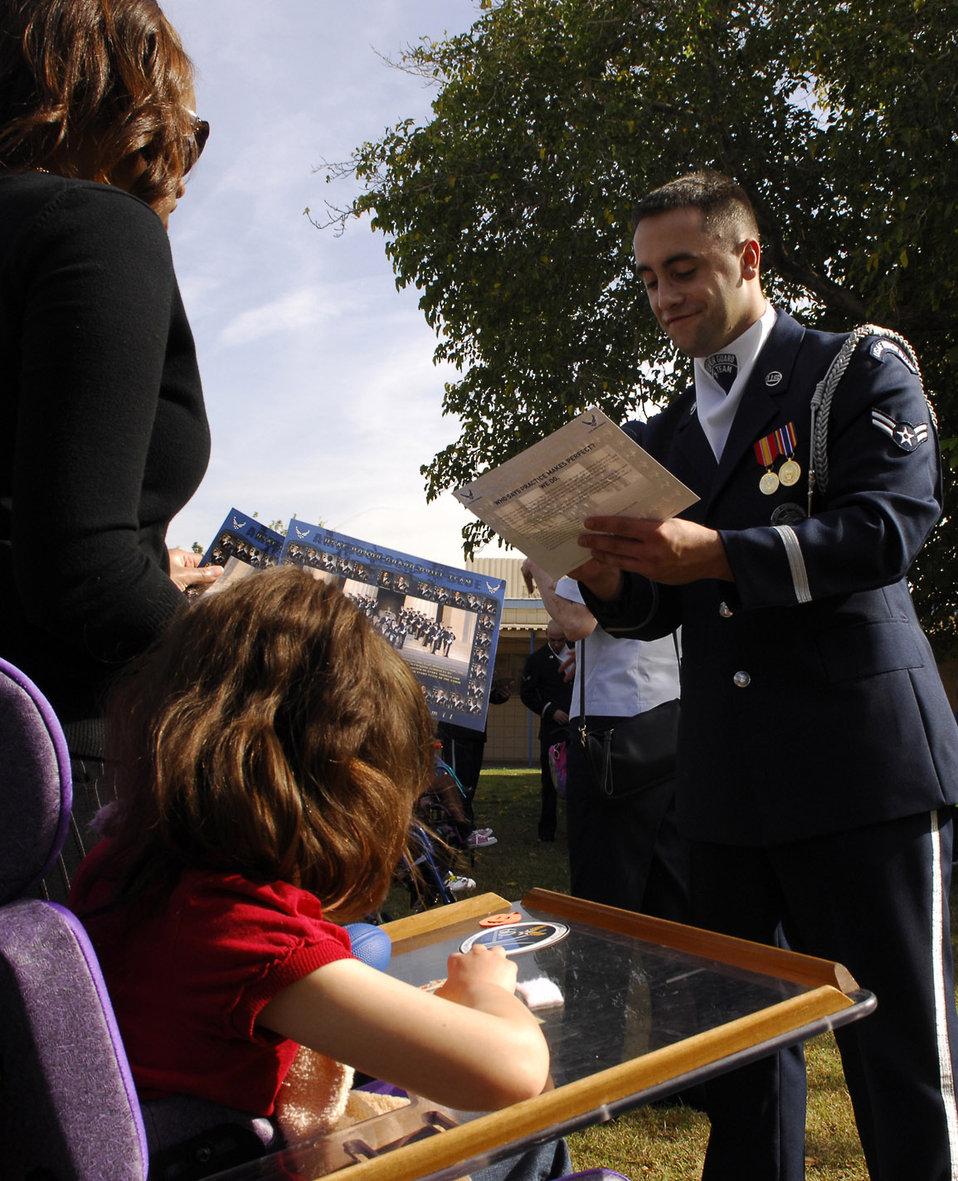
Honor Guard drill team performs for special-needs students

Airman 1st Class Peter Ising signs an autograph for a student at the John F. Miller School for Special Needs Nov. 8 in Las Vegas. Airman Ising is an Air Force Honor Guard drill team member. The drill team planned a special performance for the students at the school during their visit to the city and Nellis Air Force Base, Nev., for the final week of the Air Force's 60th Anniversary celebrations.